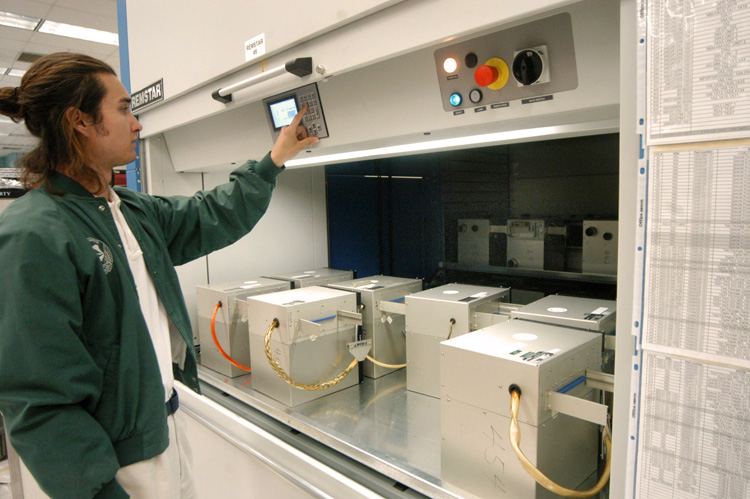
Parts storage on the 'rise' in electronics

ROBINS AIR FORCE BASE, Ga. -- Kevin Shanahan retrieves an interface test adapter from the shuttle storage system. He is helping oversee the installation of the storage systems that will free space for more workstations. He is a facilities and production engineer supporting the F-15 Eagle avionics squadron here.